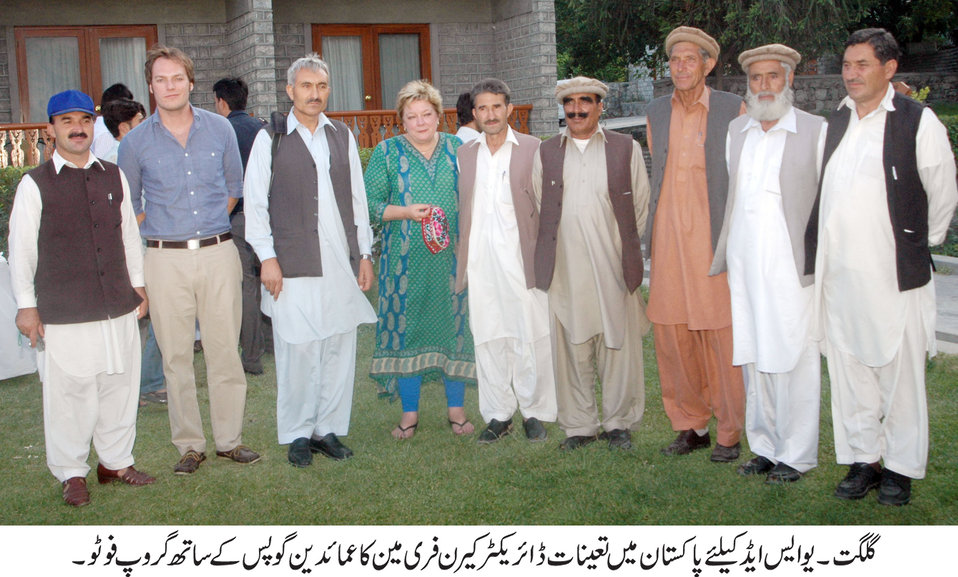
Deputy Director Karen Freeman’s visit to Gilgit Library

Karen Freeman visited the Municipal Gilgit Library on Monday, July 9. She was accompanied by other USAID staff and the staff from the Ambassador’s Fund Program. A the library, she met with Deputy Commissioner of Gilgit, Mr. Arqam and library staff, toured a photo display, and had an informal discussion with the library staff and community members about the USAID-funded project. Library staff showed the equipment funded by USAID (computers, internet, scanners, etc). The visit concluded by a Q & A session with media.